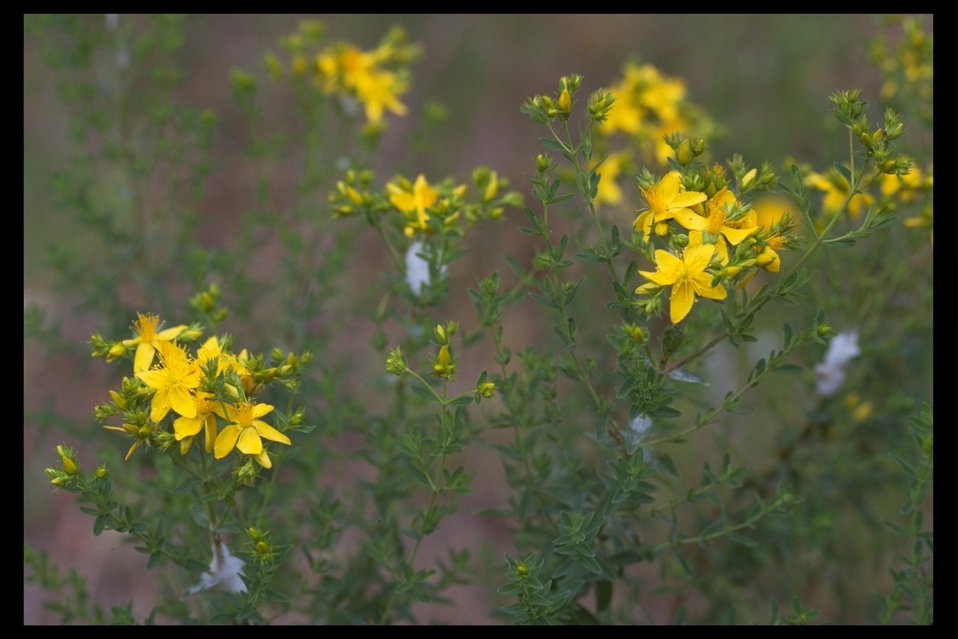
St. John's Wart, also called Klamath Weed, (Hypericum perforatum) along Upper Trail Creek.